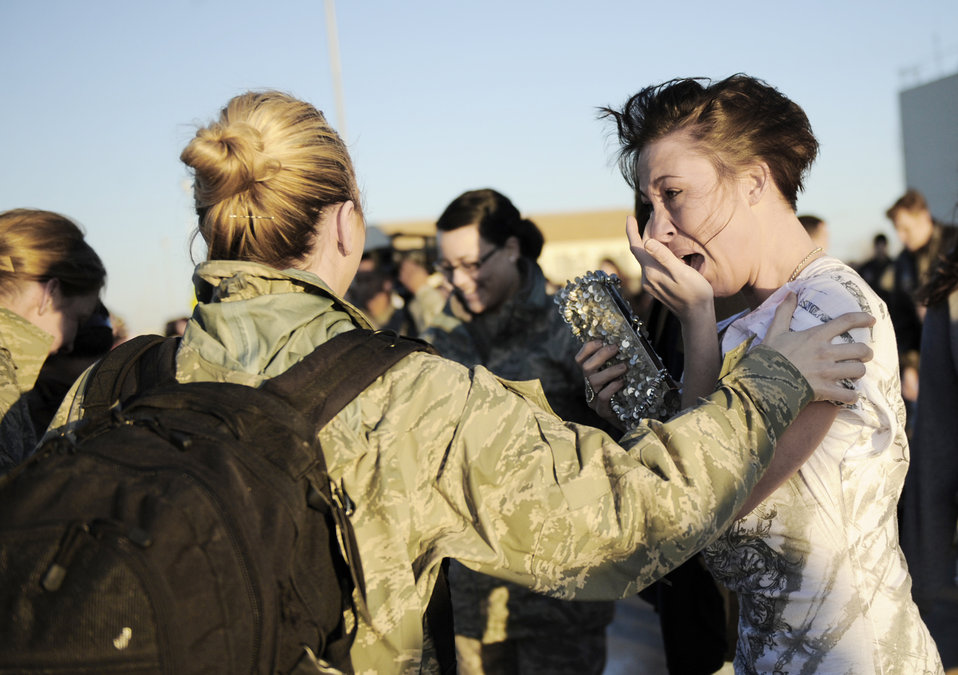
Squadron returns from South Korea

Senior Airman Miranda Wilson, 366th Aircraft Maintenance Squadron, is overcome with emotion when she welcomes back Staff Sgt. Tiffany Ryan, 366th Aerospace Medical Squadron medical technician, from a four-month deployment to South Korea Jan. 20, 2010, at Mountain Home Air Force Base, Idaho. More than 300 members of the 389th Fighter Squadron returned from their deployment in support of U.S. government and Department of Defense global engagement strategies.